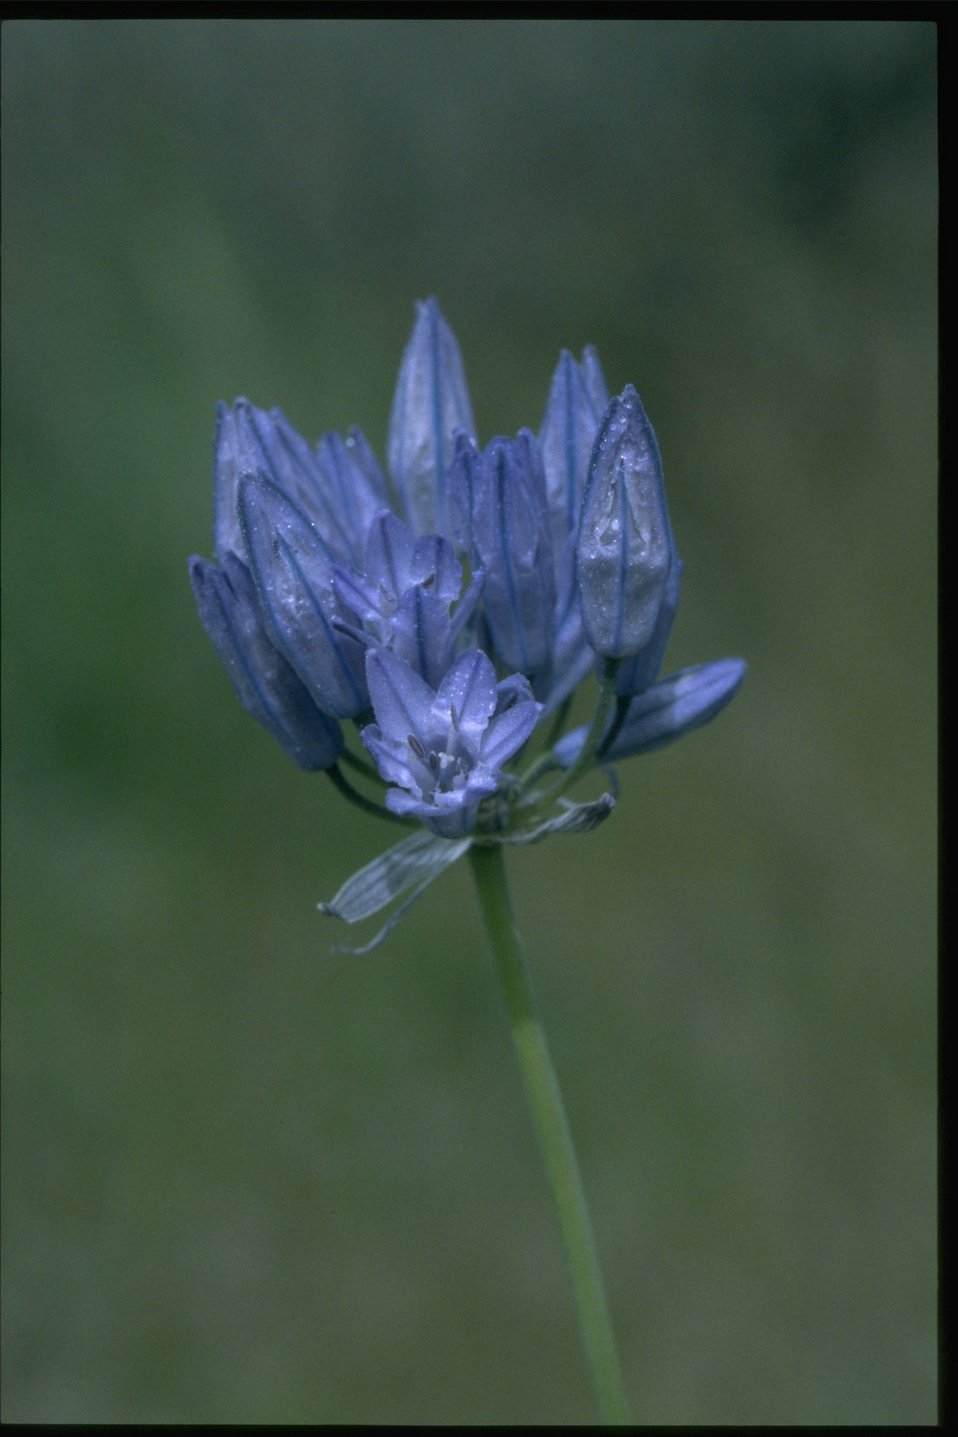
Closeup shot of Douglas' Triteleia wildflowers.